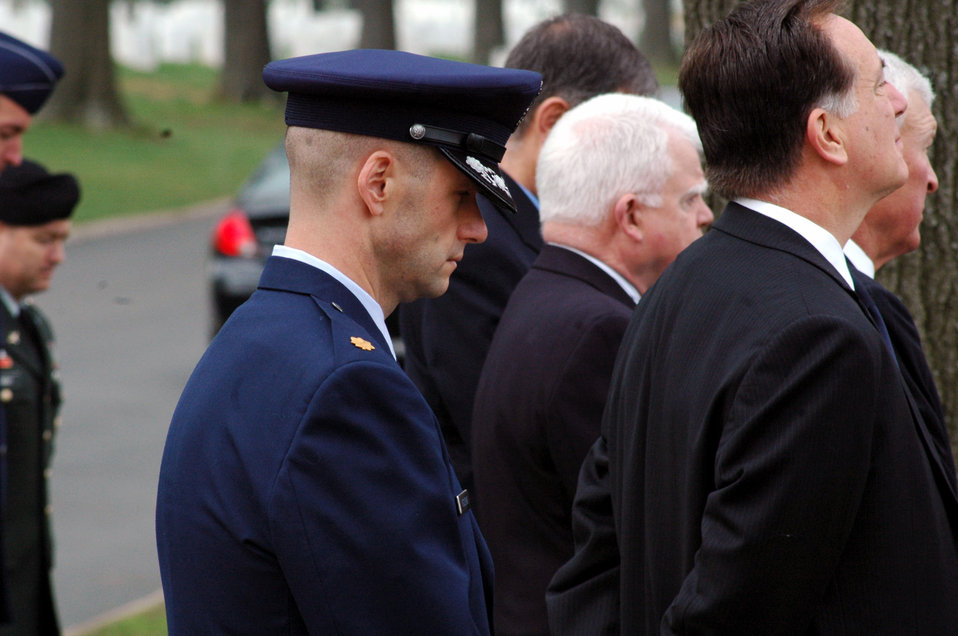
POW/MIA bracelet presented to family

Maj. Phil Heseltine participates in the funeral for Maj. Robert F. Woods April 9 at Arlington National Cemetery in Virginia. Earlier that day, Major Heseltine presented the prisoner of war/missing in action bracelet to the family of Major Woods, whose name is on the bracelet that Major Heseltine wore for 18 years. Major Heseltine is the executive officer for the Air Force Expeditionary Center commander at Fort Dix, N.J.